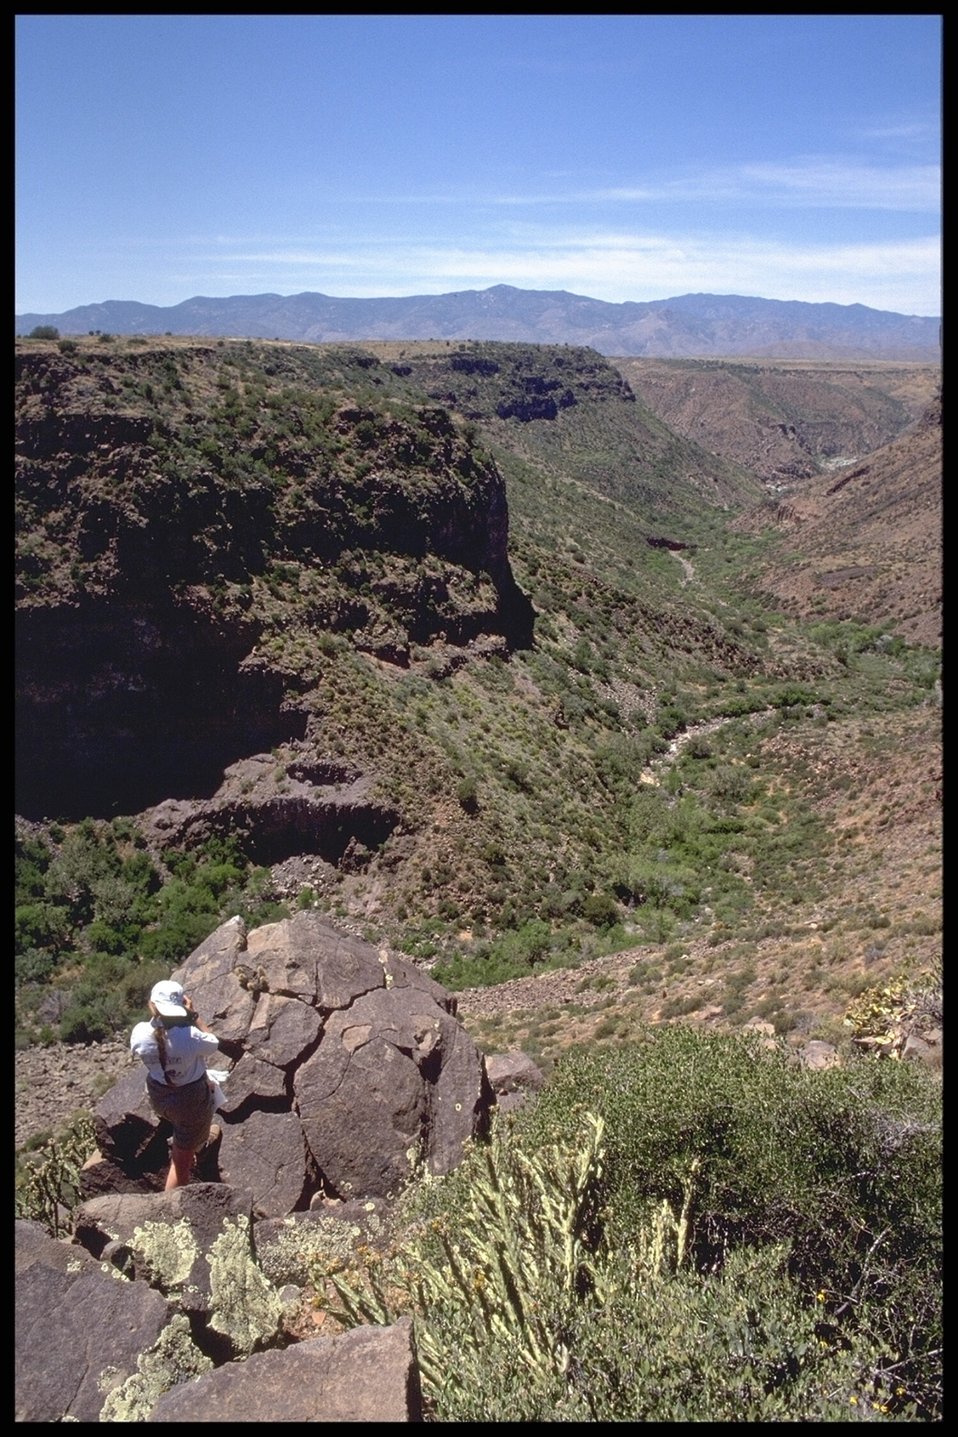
In this picture the Agua Fria River can just barely be seen in the bottom of the canyon that shares its name with the river.